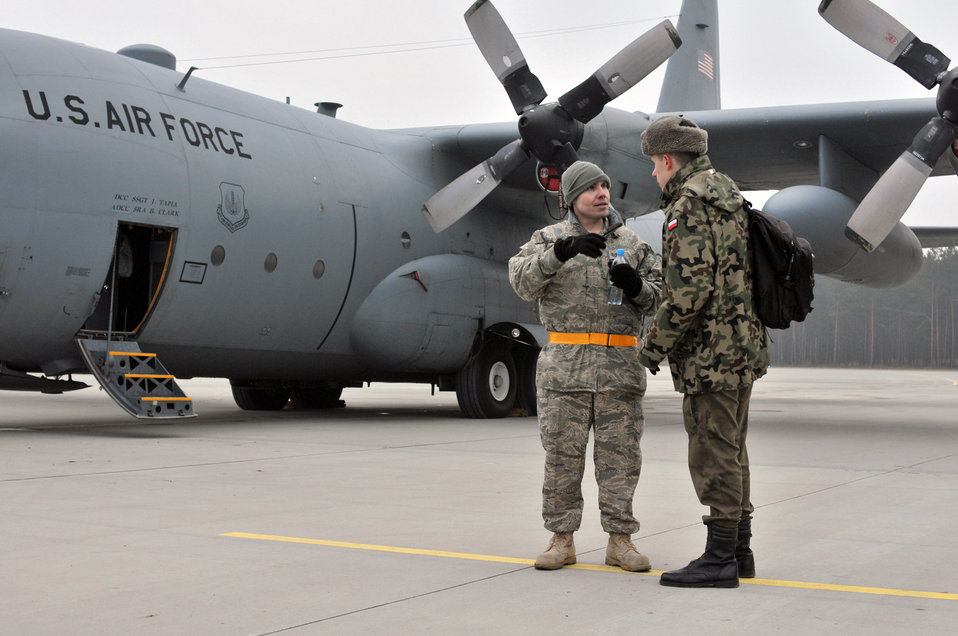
Ramstein Airmen show C-130 capabilities to Polish military

An Airmen from the 86th Airlift Wing from Ramstein Air Base, Germany, talks with a Polish air force member about C-130 Hercules procedures Jan. 28 at Powidz Air Base, Poland.